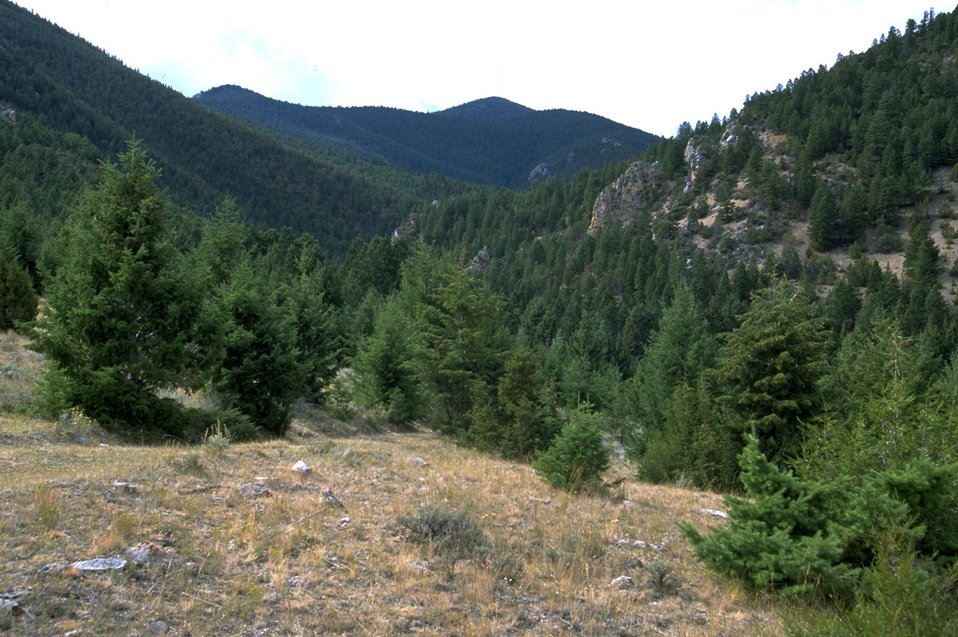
A scenic view of mountains and trees in the Axolotl Lake area